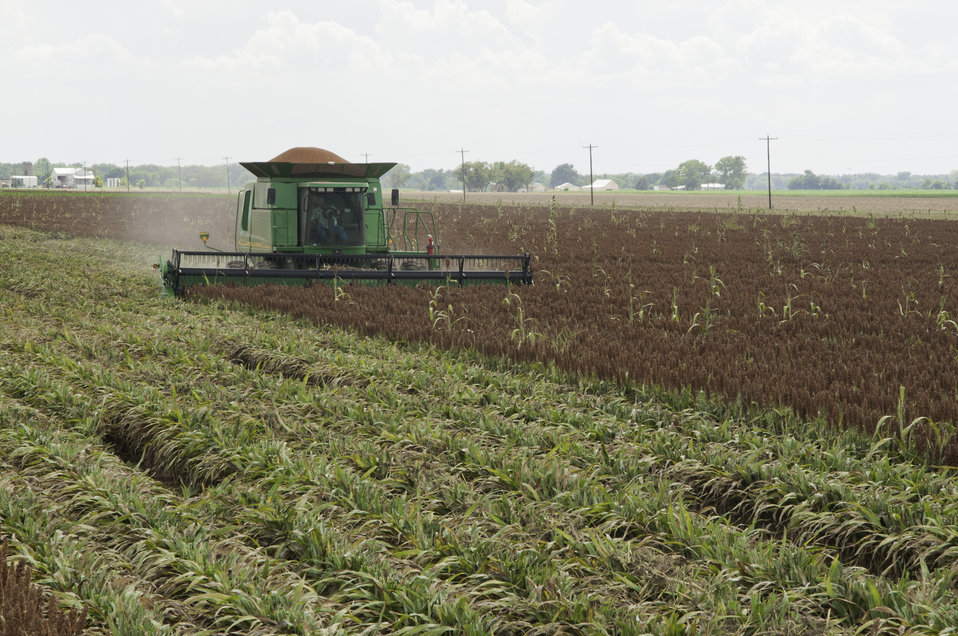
Grain sorghum is harvested on the Wilder Farms in Navasota, TX on Aug. 23, 2013.